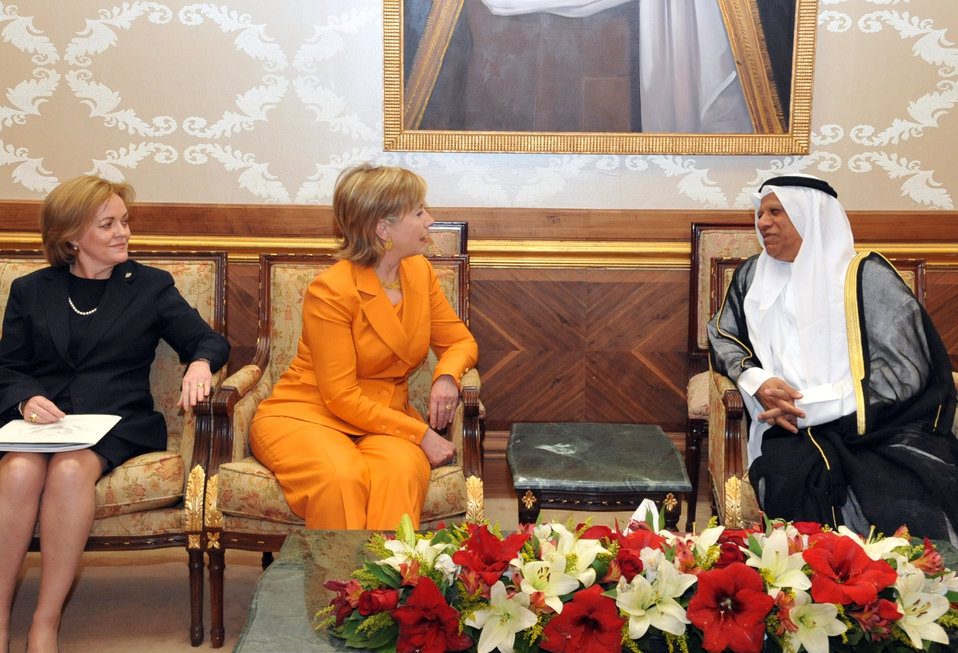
Secretary Clinton Meets With Kuwaiti Officials

U.S. Secretary of State Hillary Rodham Clinton arrives in Kuwait to a welcome from Kuwaiti Ministry of Foreign Affairs Ambassador Ali Al-Sammak (left) and U.S. Ambassador to Kuwait Deborah K. Jones (left) in Kuwait City, Kuwait April 24, 2009.